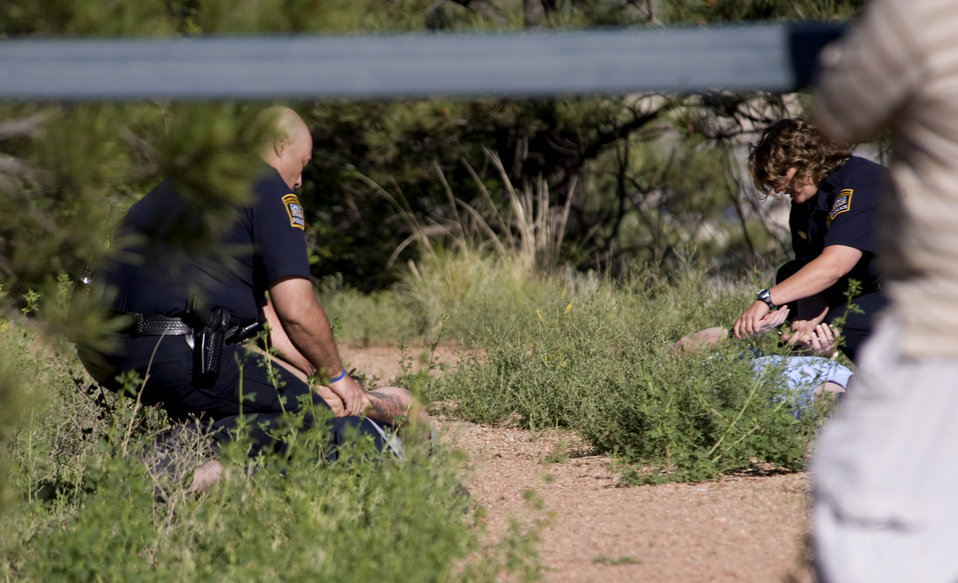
Coalition Warrior Interoperability Demonstration

Officers from the University of Colorado at Colorado Springs take suspects into custody during the Coalition Warrior Interoperability Demonstration June 16, 2010, in Colorado Springs, Colo.